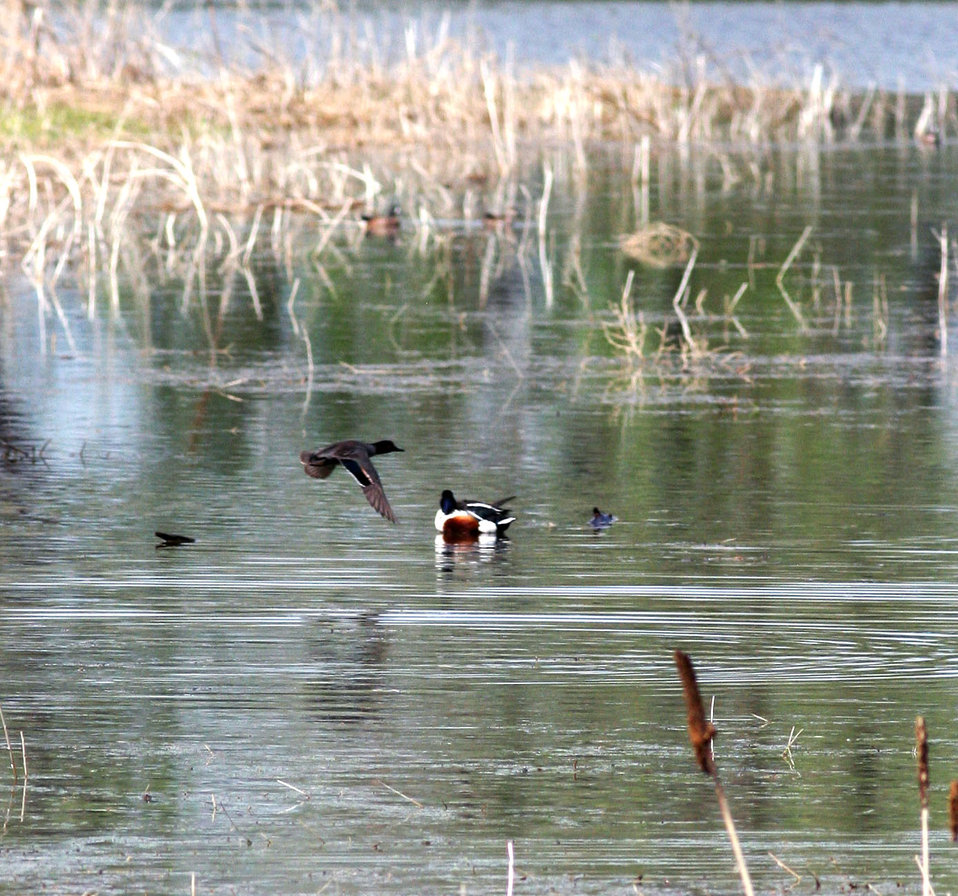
Ducks at RMA

A green-winged teal buzzes a northern shoveler Lower Derby Lake at the Rocky Mountain Arsenal National Wildlife Refuge in Commerce City.